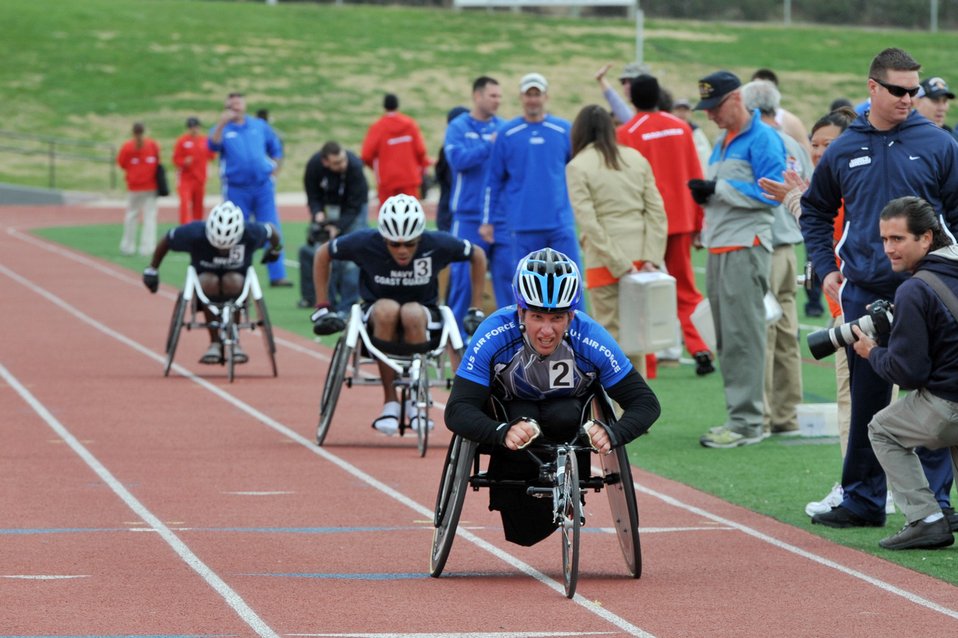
2011 Warrior Games

Air Force athlete Jason Morgan competes in the wheelchair 800 meter dash May 17, 2011, during the track competition at the 2011 Warrior Games at the U.S. Olympic Training Center in Colorado Springs, Colo. Some 200 wounded warriors and disabled veterans from all the military services are competing in paralympic-style athletic events May 16 through May 21.